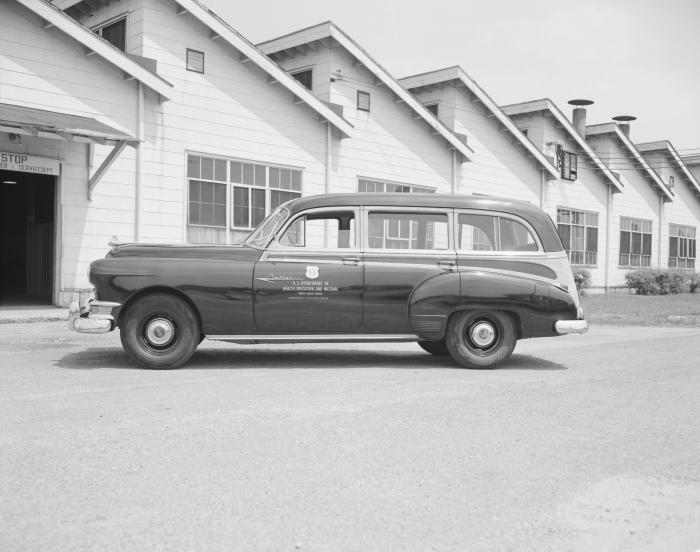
This photograph depicted a U.S. Department of Health, Education and Welfare vehicle while it was parked on the Centers for Disease Control's Chamblee, Georgia Campus.